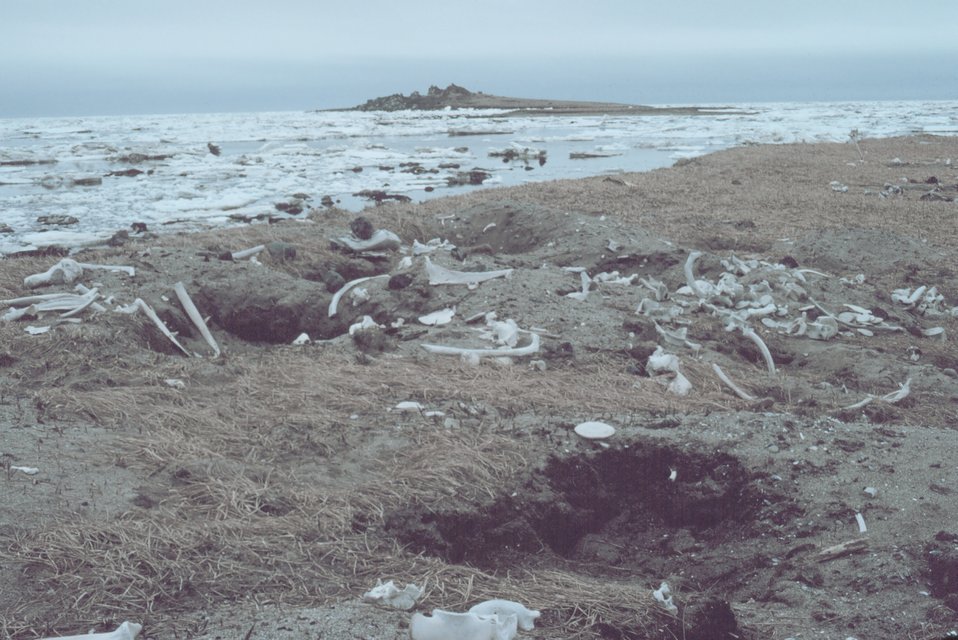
Currents carry many dead things to Punuk Island making it the graveyard of the Bering Sea.